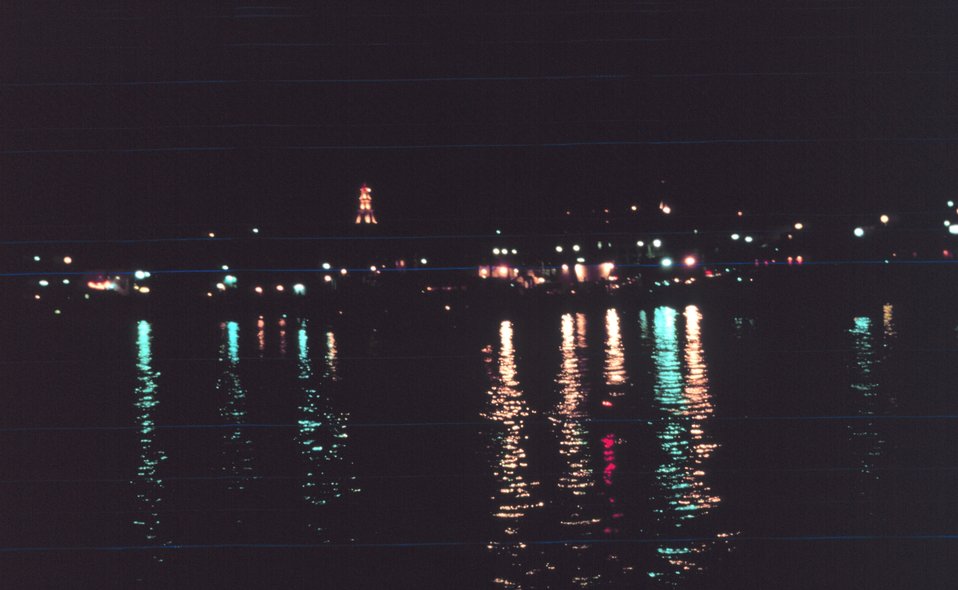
Night lights of Gloucester.